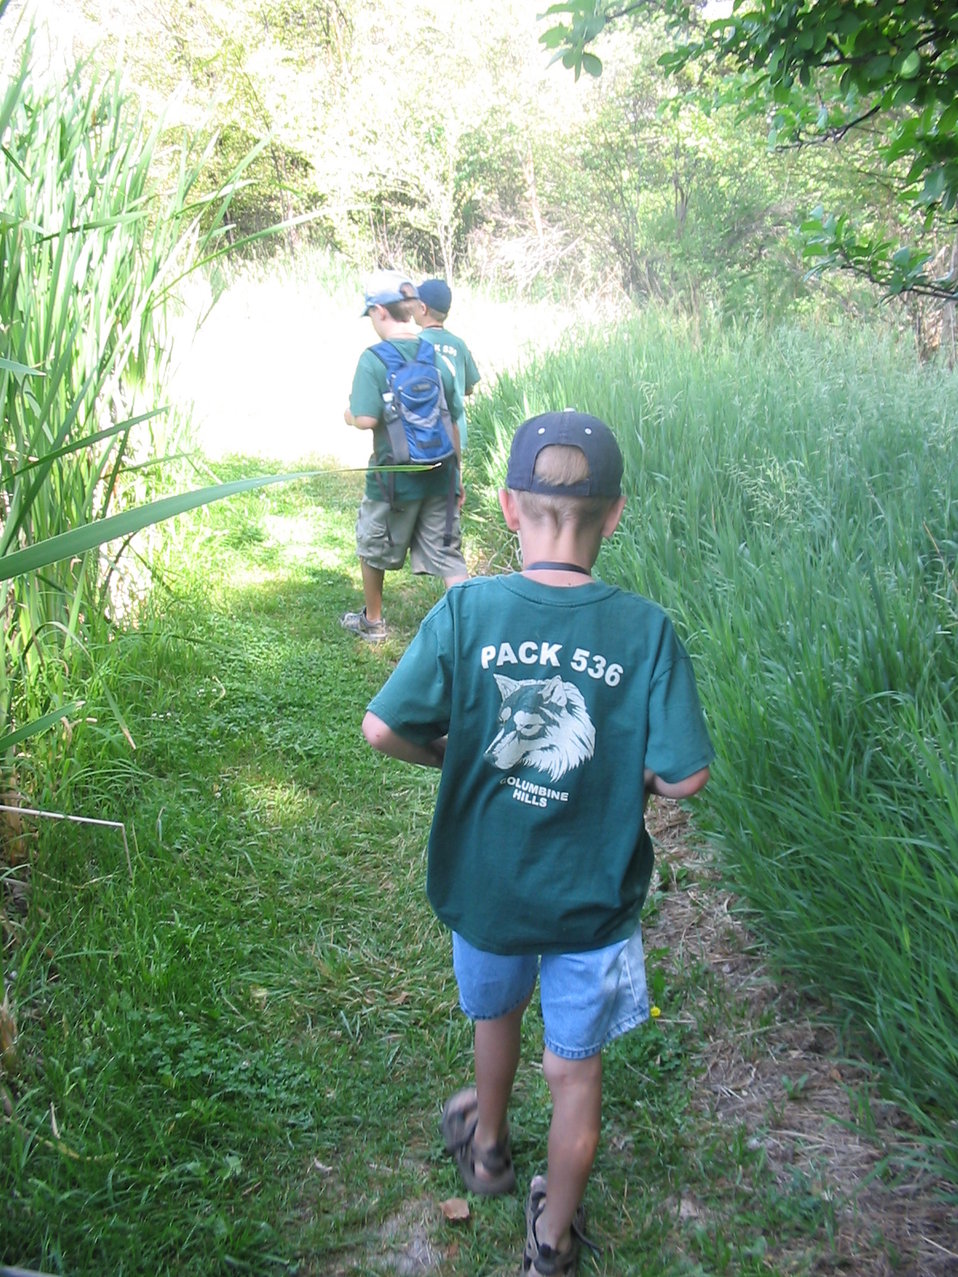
Cub Scout